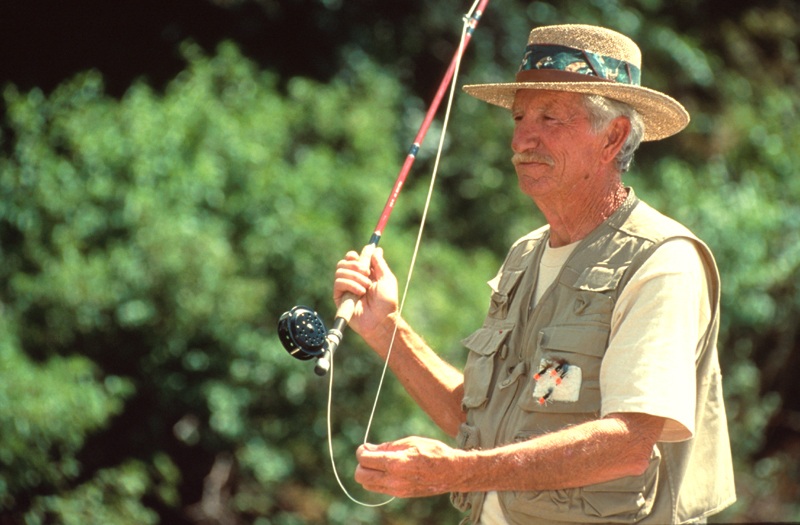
South Fork of the Snake River